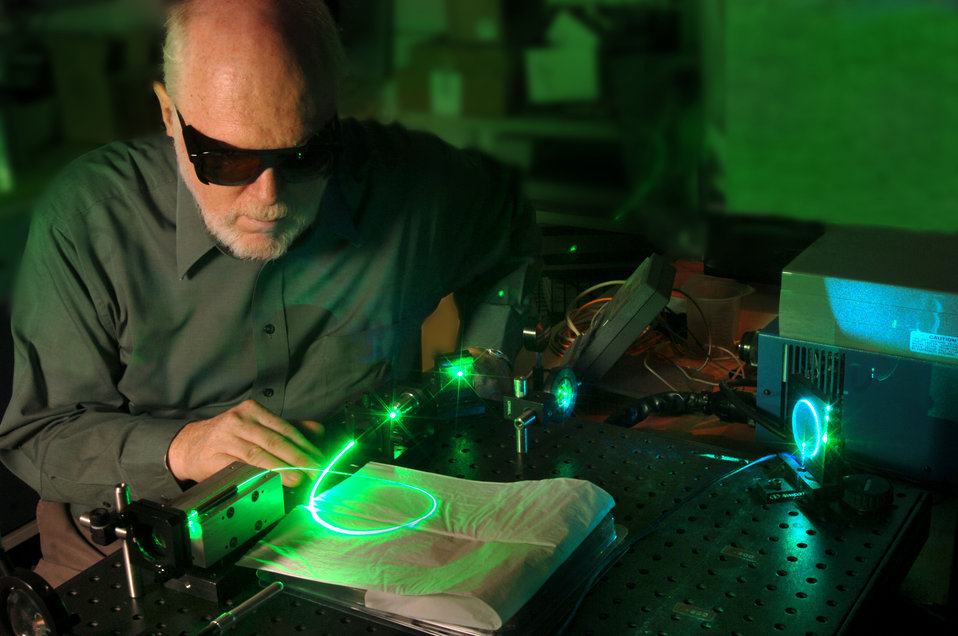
NETL scientist Steven Woodruff is evaluating a photonic crystal optical fiber as a raman sensor for gaseous materials.

The hollow core fiber enables a significant enhancement of the Raman signals from gas phase components, such as hydrocarbons in natural gas and the hydrogen and carbon monoxide in syngas. Raman sensing also permits measurements of homonuclear diatomics such as hydrogen, nitrogen and oxygen.